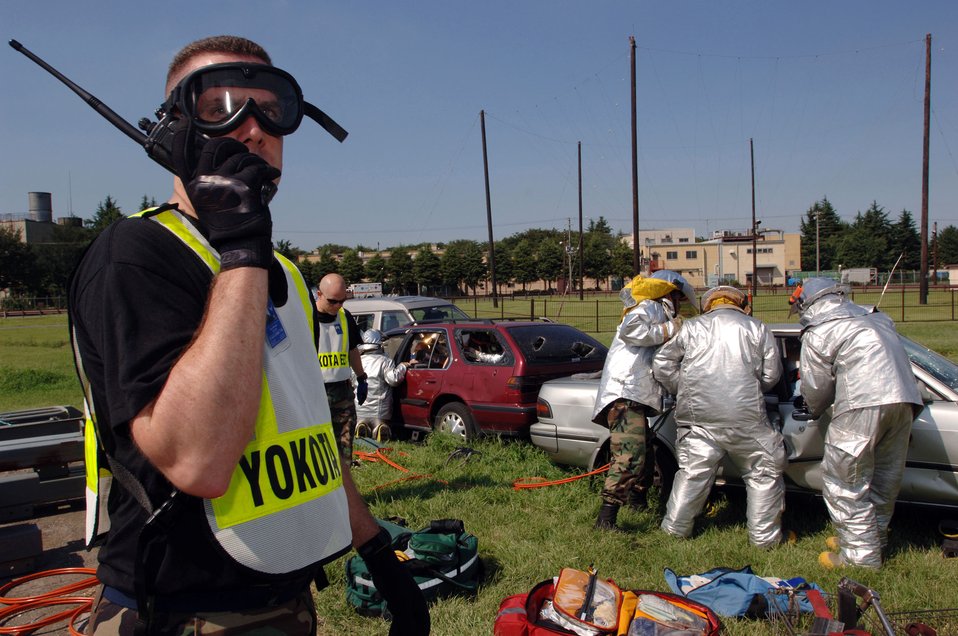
Training day

YOKOTA AIR BASE, Japan -- Master Sgt. Dean Riewald observes firefighters with the 374th Civil Engineer Squadron respond to an "emergency" during a rescue training exercise here Sept. 14. He is an exercise evaluator.